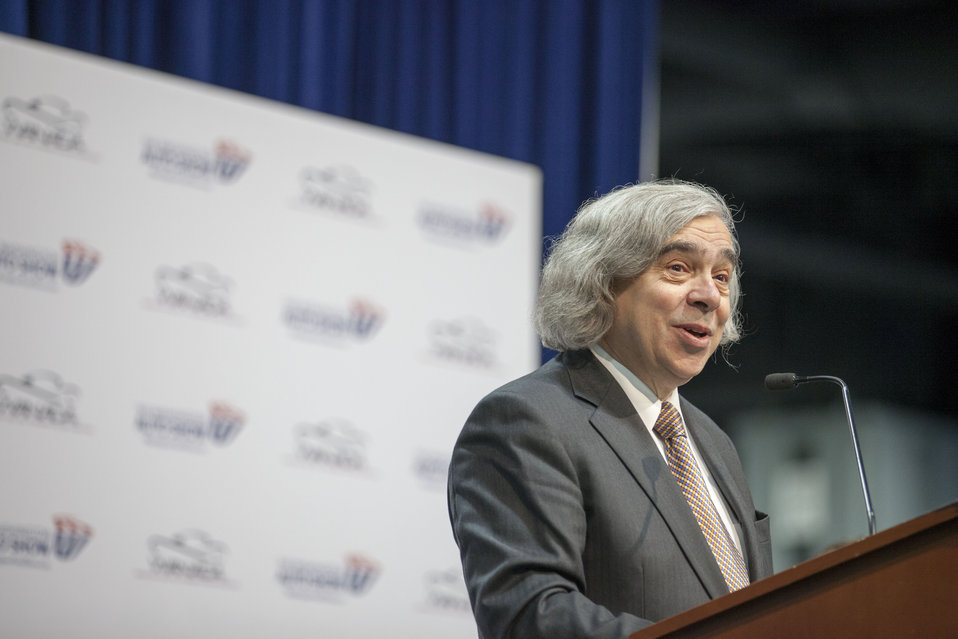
Secretary Moniz toured the Washington Auto Show before giving a keynote speech, highlighting the Energy Department’s role in developing the next generation of fuel-efficient and electric vehicles. During Secretary Moniz’s remarks, he announced nearly $50 million to support advanced vehicle technologies that will provide drivers with more transportation options while helping them save money at the pump.